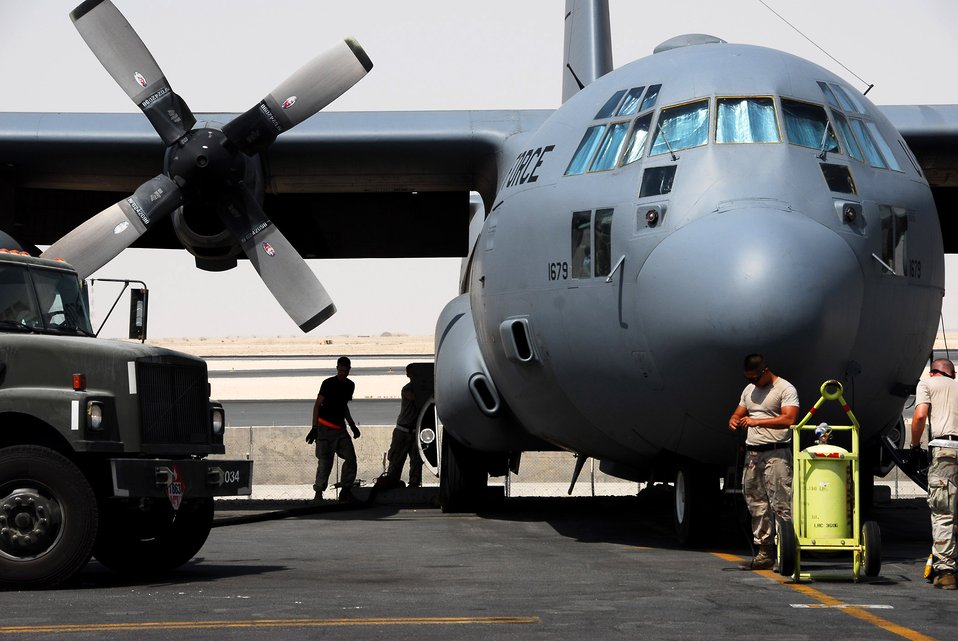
Airpower Summary for Sept. 11, 2007

Air Force maintainers prepare a C-130 Hercules for an airlift mission at a base in Southwest Asia. On Sept. 11, approximately 160 airlift sorties were flown, 430 tons of cargo were delivered and nearly 4,775 passengers were transported.